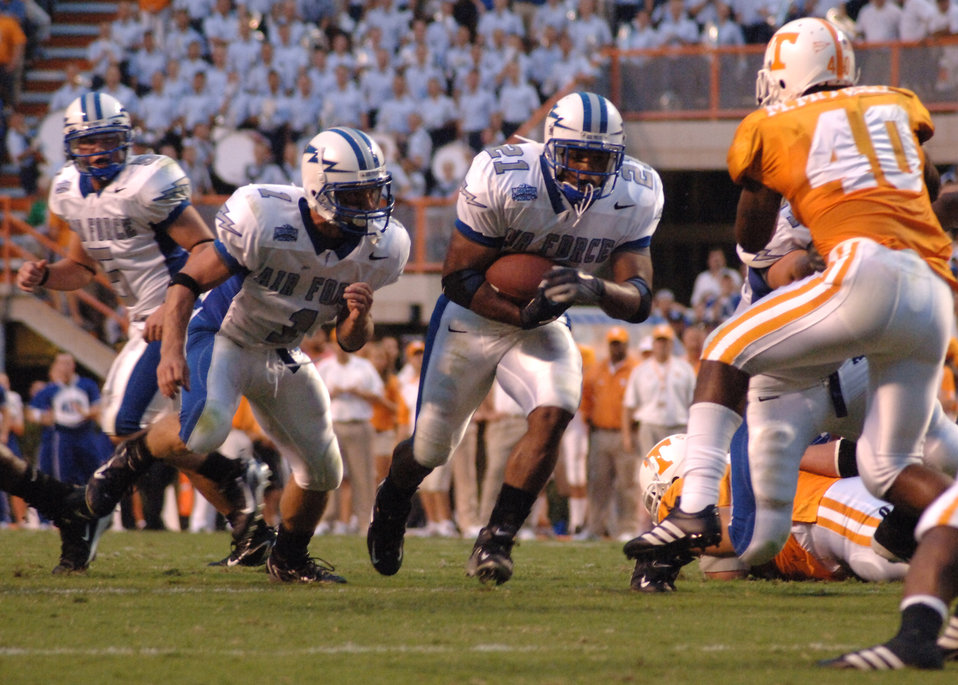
Falcons nearly upset #11 Tennessee in close season opener

Air Force Academy Falcons fullback Ryan Williams (21) prepares do deliver a mid-field blow to Tennessee middle linebacker Marvin Mitchell. Williams' 98 rushing yards led the Falcons' ground game, which ended the game with 51 carries for 281 yards. In a very tight game Sept. 9, the Falcons' clock-eating triple-option offense nearly pulled off an upset over #11 Tennessee, which managed to hold off the Falcons for a 31-30 victory.